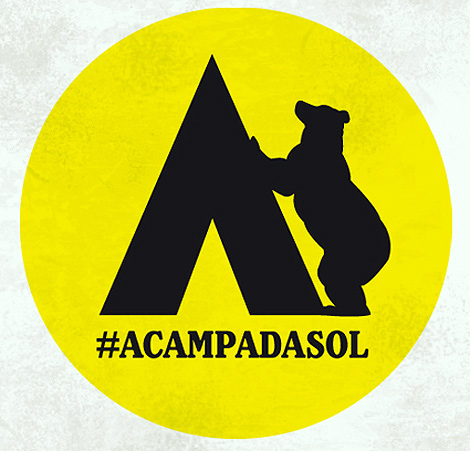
Español: Logotipo #AcampadaSol